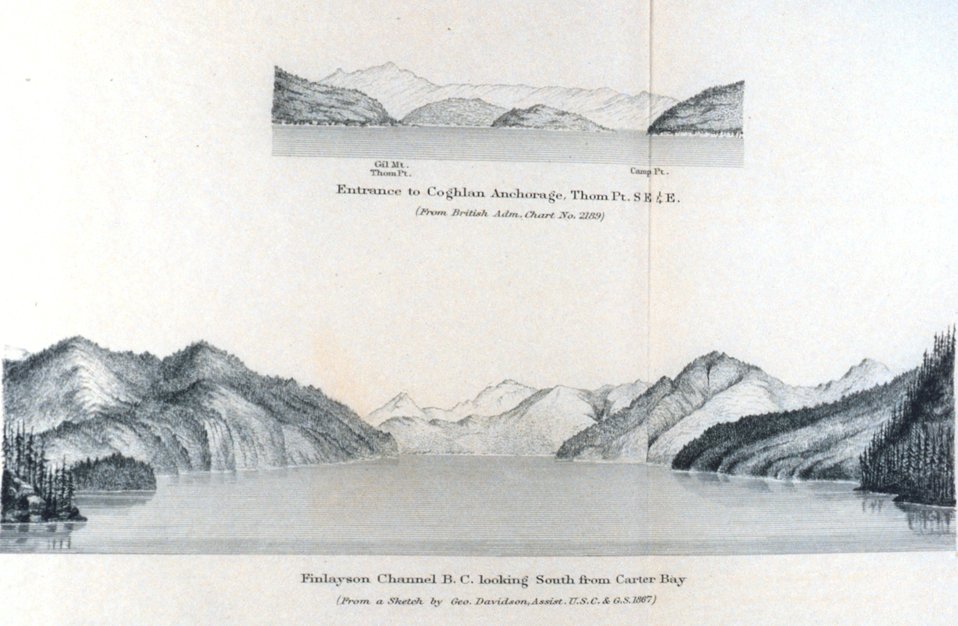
Entrance to Coghlan Anchorage. Finlayson Channel B. C. looking south from Carter Bay. In: Pacific Coast Pilot Alaska Part I 1883. P. 28. Library call number VK943 .N3 1883.